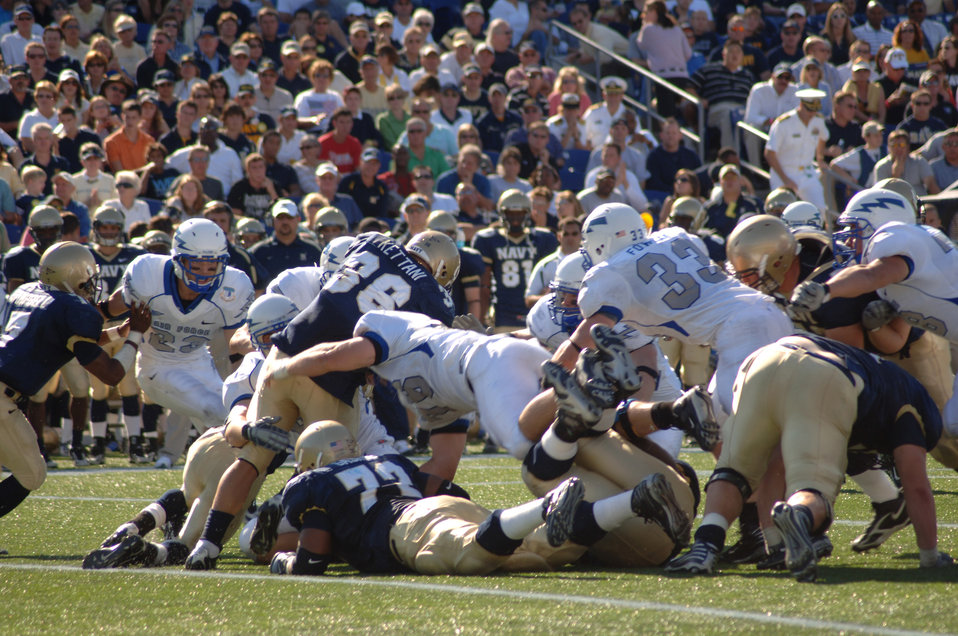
Football: Falcons fall to Navy, 31-20

U.S. Air Force Academy Falcon noise guard Stephen Larson, 76, leads the defensive charge into Navy fullback Eric Kettani, 36, during Air Force's 31-20 loss to the Midshipmen Sept. 29 at Annapolis, Md. Larson had a career high seven tackles and a sack in the game.